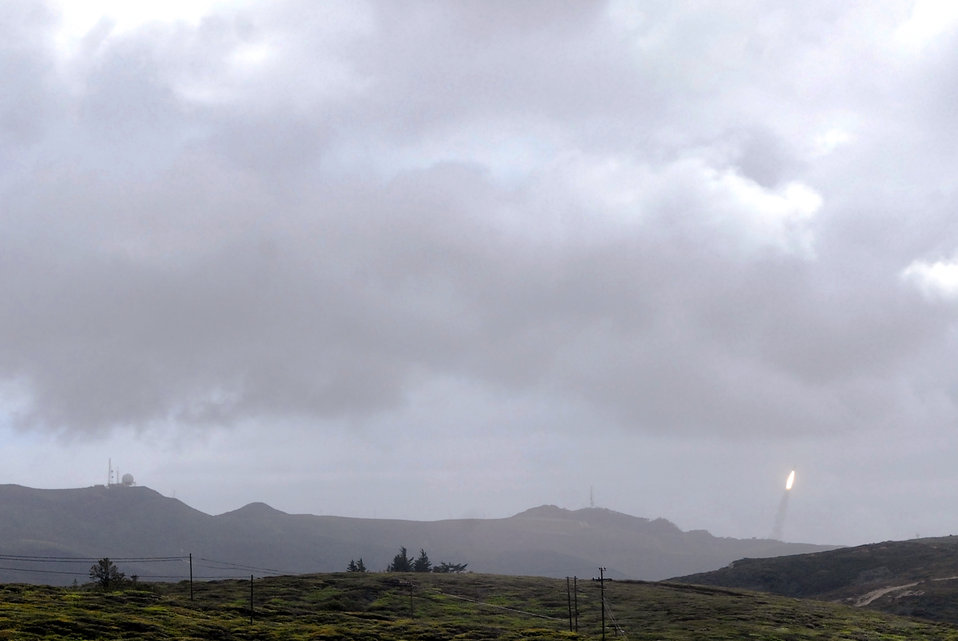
First Minotaur IV Lite launches from Vandenberg

Vandenberg Air Force Base officials launch the first Minotaur IV Lite launch vehicle at 4 p.m. April 22, 2010,at Vandenberg AFB, Calif.